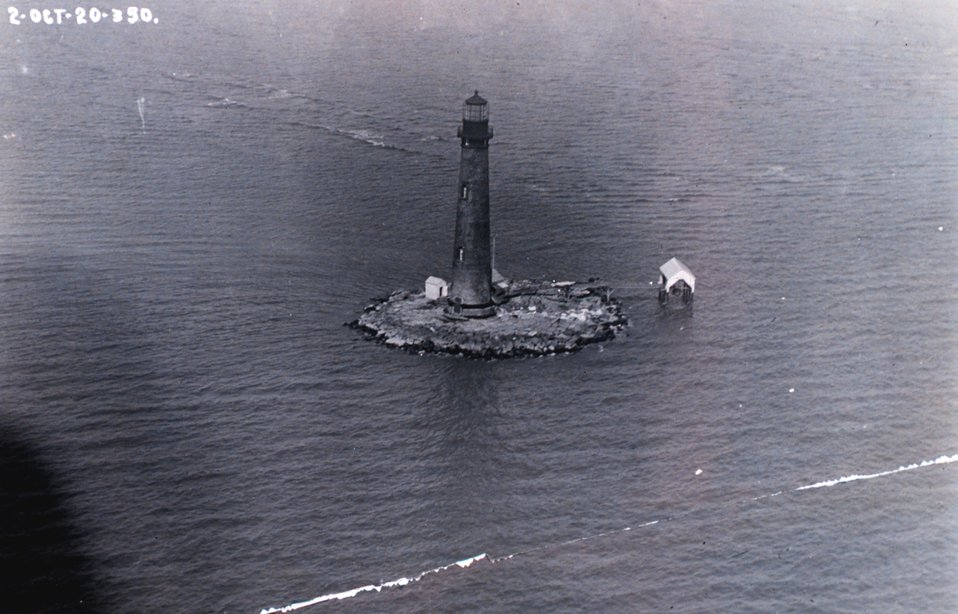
Sand Island Lighthouse as photographed from a U. S. Navy airplane.